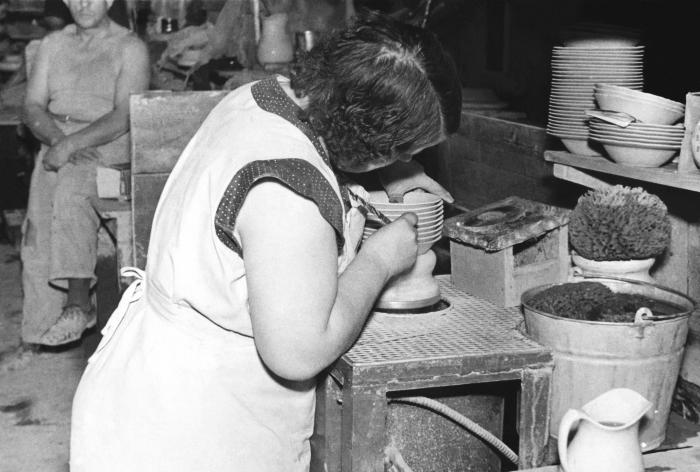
This historical image, which was provided by the Center for Disease Control's (CDC), National Institute for Occupational Safety and Health (NIOSH), depicted a West Virginia ceramics industry worker as she was trimming ceramic 'greenware' in a factory setting, Greenware constitutes a clay form, which had not yet been fired, which would convert the form to a hardened bisque. Note that this woman was not wearing a protective filtered breathing mask, though she was standing in an environment notoriously known to be contaminated with airborne particulates, which would lead to the chronic pulmonary disease known as pneumoconiosis, or silicosis, or more commonly known as 'grinders' disease', characterized by the formation of nodular fibrotic changes in the lungs. The image was published in the 'Public Health Bulletin', No. 244, 1939.